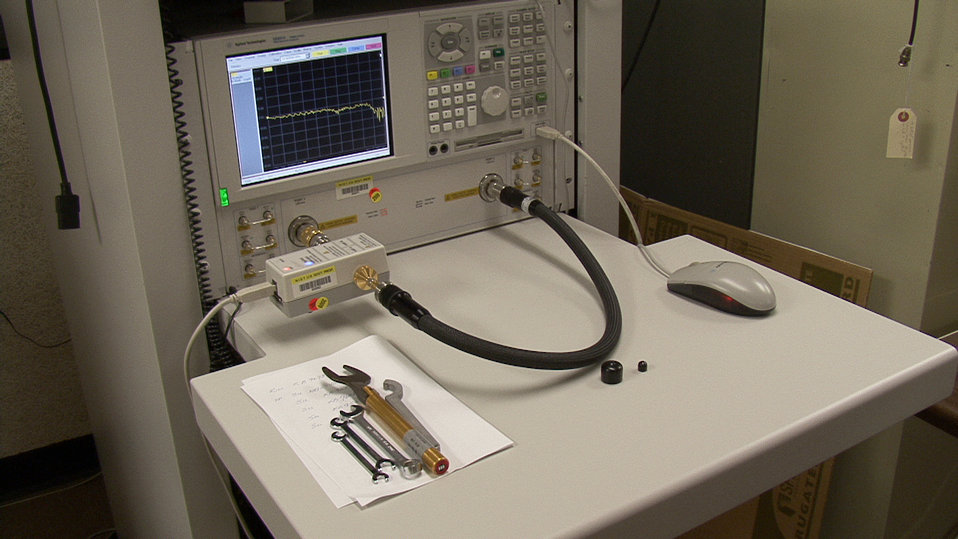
Network Analyzer Calibration

Verifying the performance of vector network analyzers-devices that check how components used in cell phones, radios and satellites transmit signals-has gotten a lot easier and faster with this plug-in device and accompanying software developed by NIST. A process that once took hours or days can now be done in minutes.